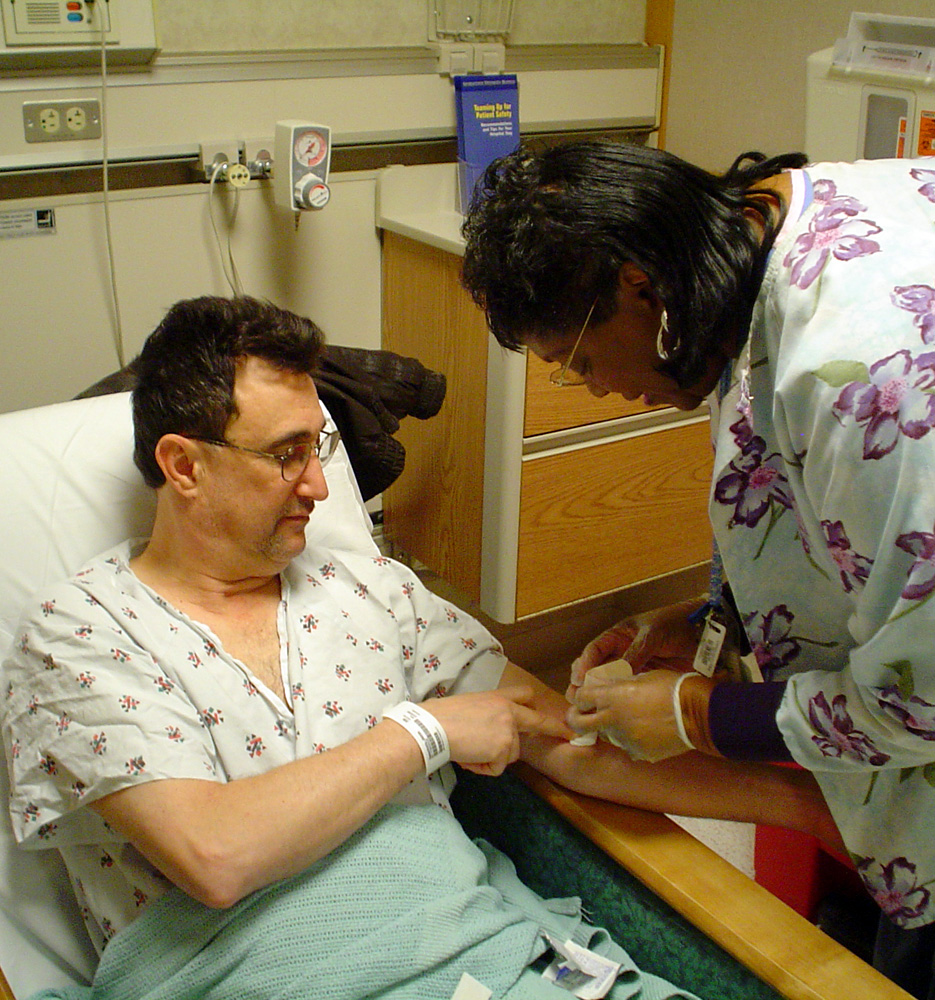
McConnell employee donates marrow

Regina Murray, a clinical technician at Georgetown University Hospital in Washington, D.C., takes blood from James Speanburg before his bone marrow surgery Friday, March 24, 2006. Mr. Speanburg was identified as a marrow match for a 10-year-old boy with severe aplastic anemia. Mr. Speanburg is a certified pharmacy technician with the 22nd Medical Support Squadron at McConnell Air Force Base, Kan.